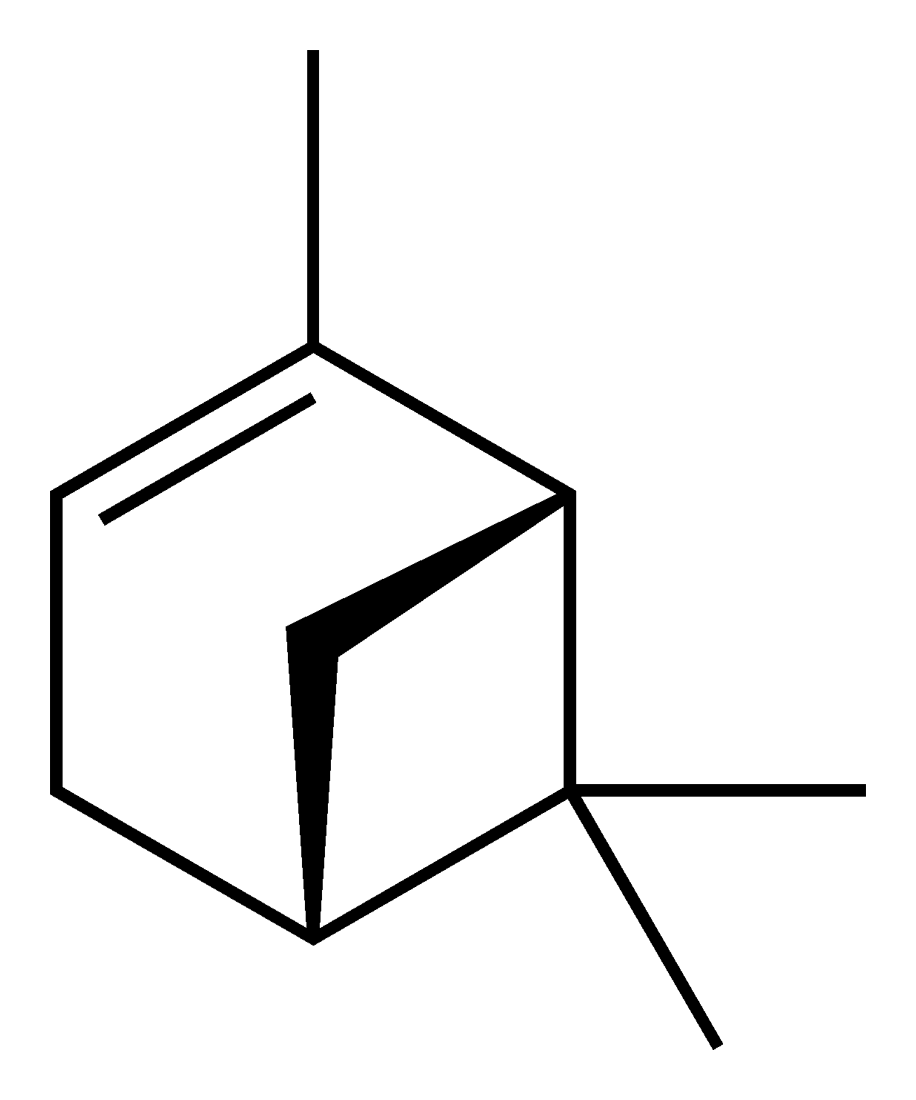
Skeletal formula of the (1R)-( )-α-pinene molecule, C10H16.